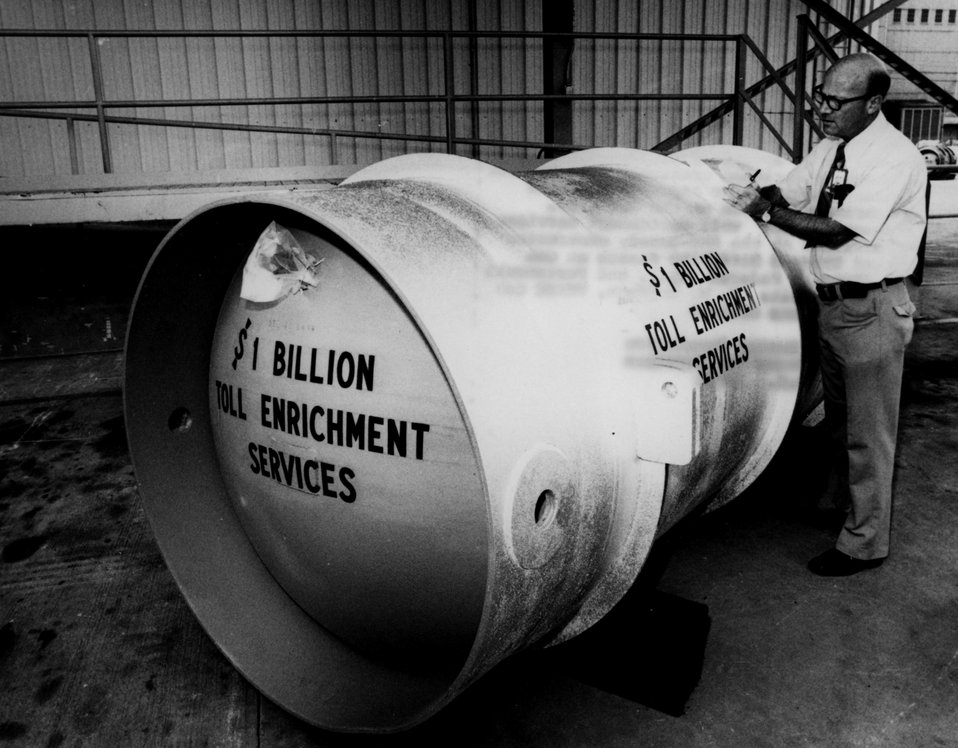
Over 90 percent of the world's nuclear power plants that are expected to be operating through this decade will require enriched uranium. c. 1974